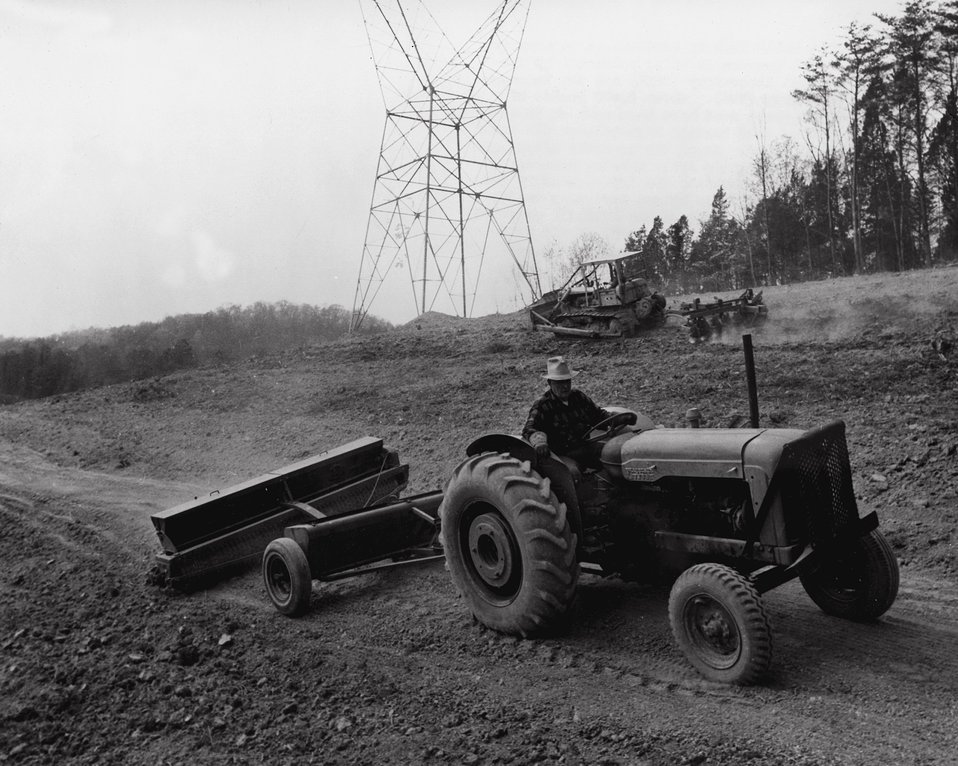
A cooperative environmental program is being conducted by Oak Ridge National Laboratory (ORNL) and the Tennessee Valley Authority (TVA). c. 1972